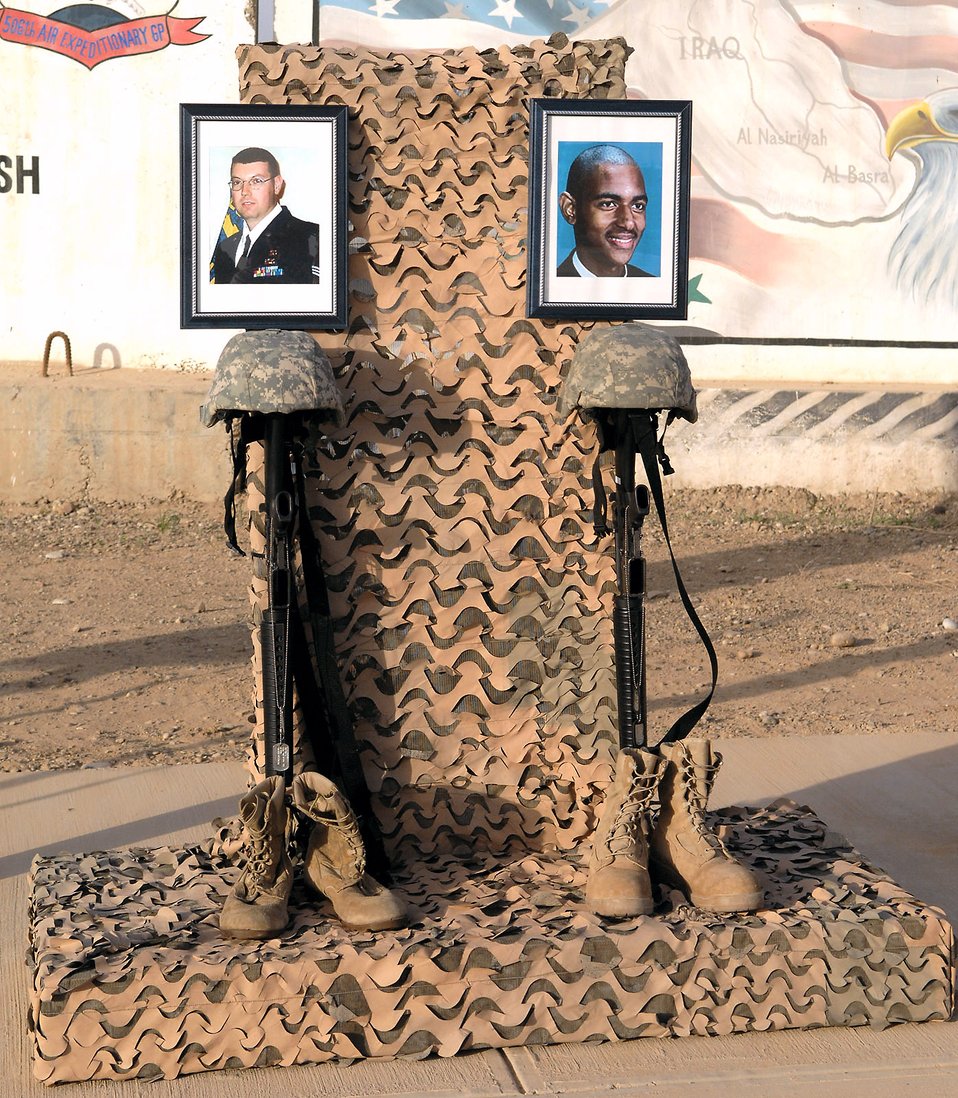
Kirkuk Airmen commemorate 5-year OIF anniversary

Members of the 727th Expeditionary Air Control Squadron set up a memorial in remembrance of two of the unit's fallen Airmen during a ceremony to commemorate the fifth anniversary of Operation Iraqi Freedom March 20 at Kirkuk Air Base, Iraq. Staff Sgt. Patrick Griffin and Airman 1st Class Antoine Holt, both from the 727th EACS, died during combat operations in 2003 and 2004.